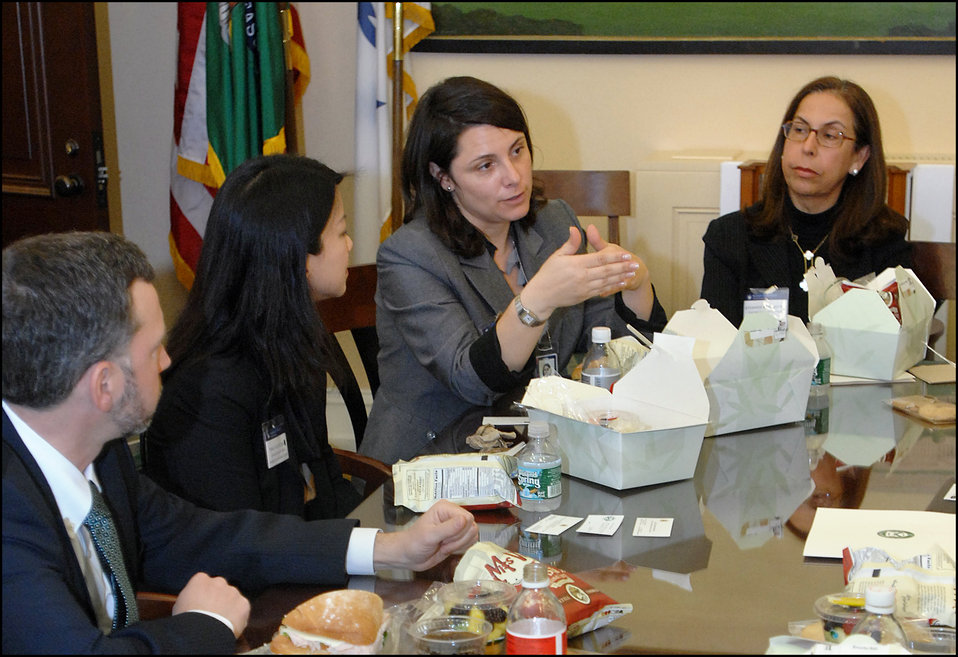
Women in Finance Symposium, 03/29/2010

Guests at Women in Finance Symposium discussing Solutions and Success Stories during the working breakout lunch at Treasury, March 29, 2010.